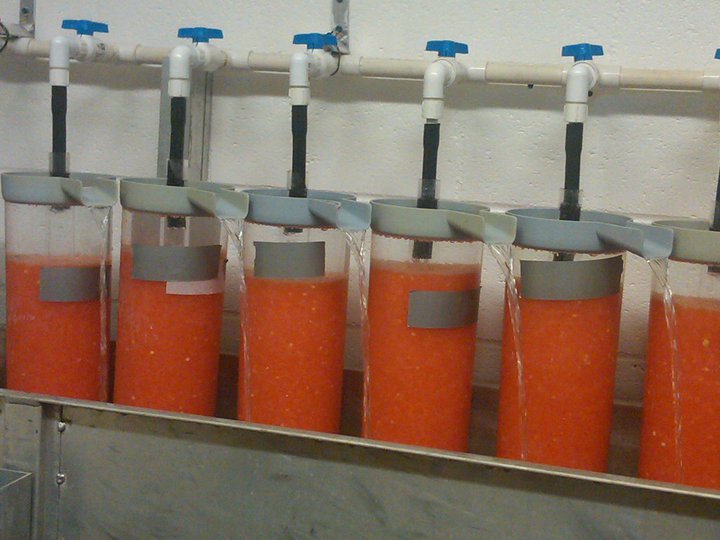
Rainbow Trout Eggs

Ennis National Fish Hatchery produces rainbow trout eggs annually for research facilities, universities, and other hatcheries in 23 different states.